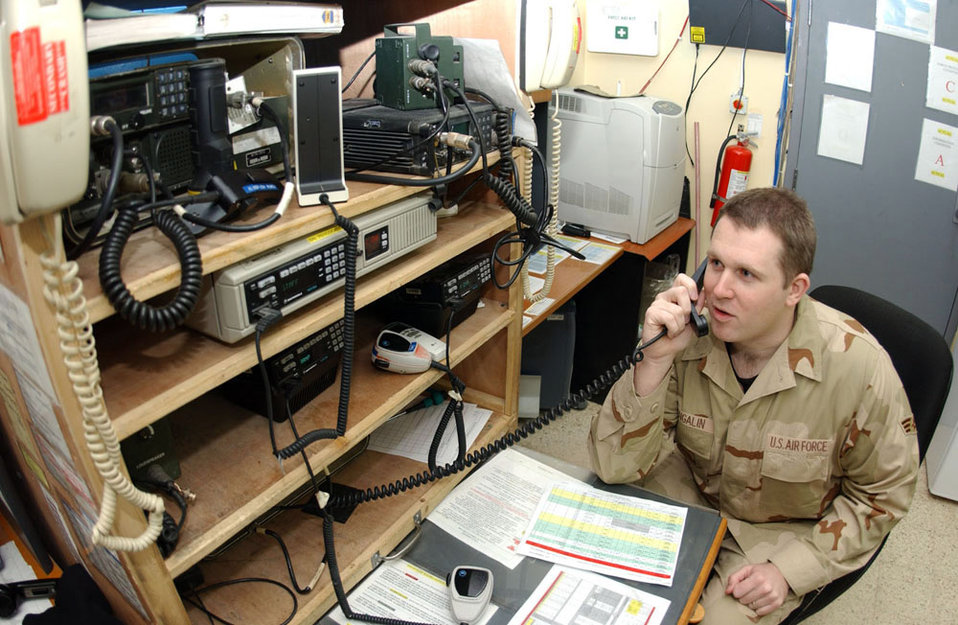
Command post controller help keep Balad secure

BALAD AIR BASE, Iraq -- Senior Airman Jeff Mangalin of the 332nd Air Expeditionary Wing command post, talks to an aircraft preparing to taxi into the base here.